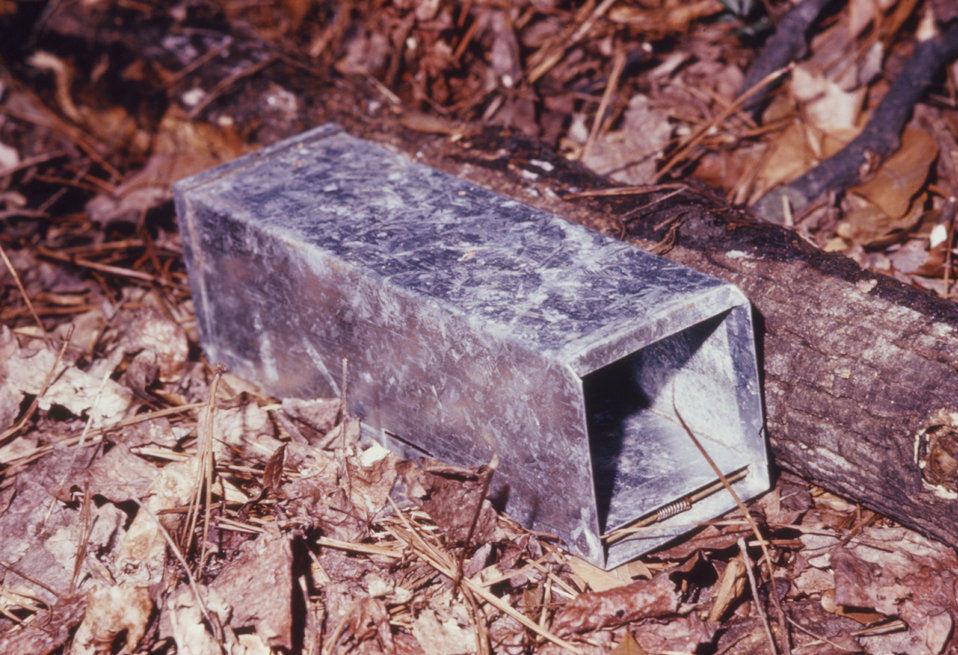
This is an aluminum Sherman Trap�, which was used to capture animals live during a 1974 arboviral study.